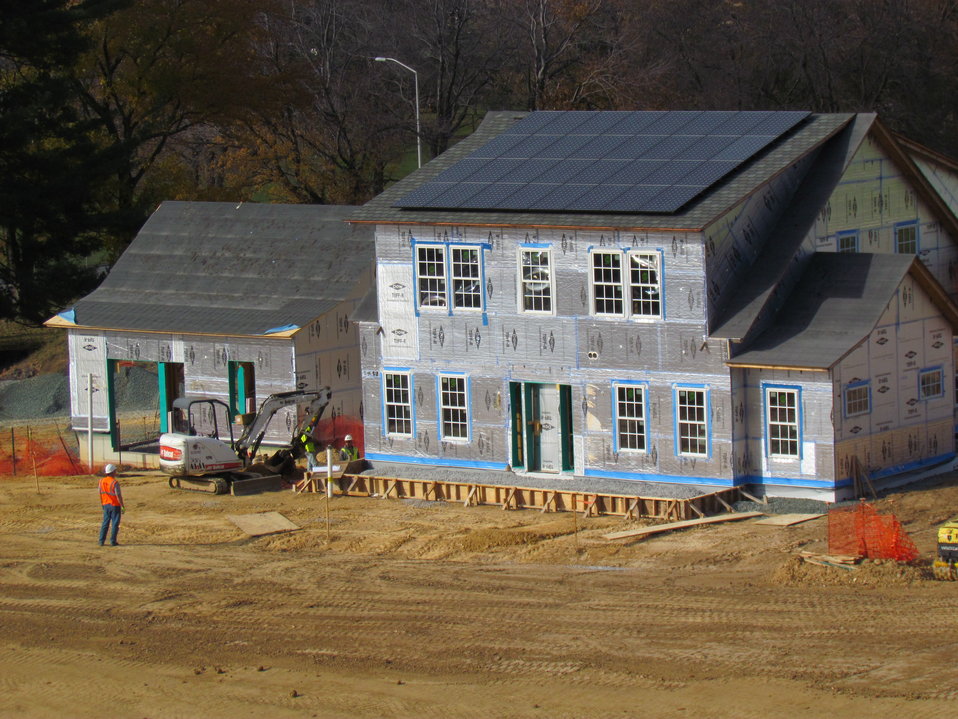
Net-Zero Energy Residential Test Facility - Photo showing front of facility with windows and solar photovoltaic panels installed.